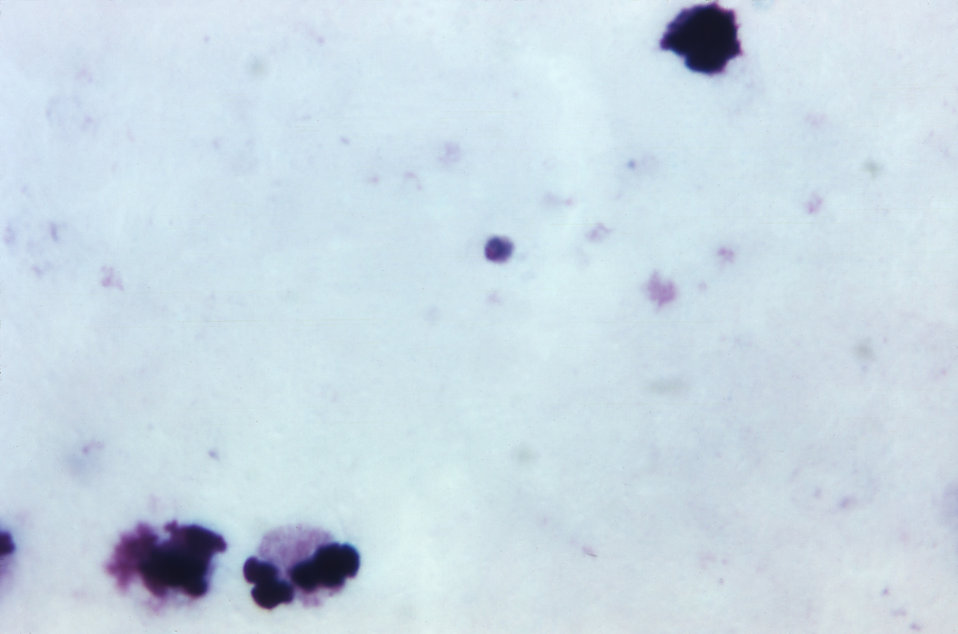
This thick film photomicrograph depicts a growing Plasmodium malariae trophozoite using Giemsa stain; Magnified 1125X.